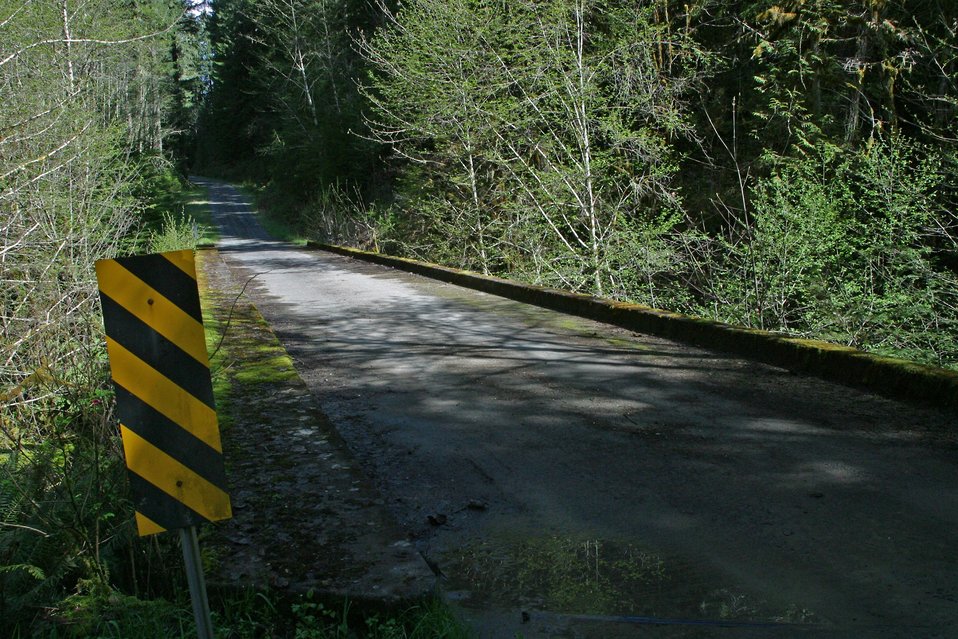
The Lyons bridge over the Little N. Fork Santiam River.